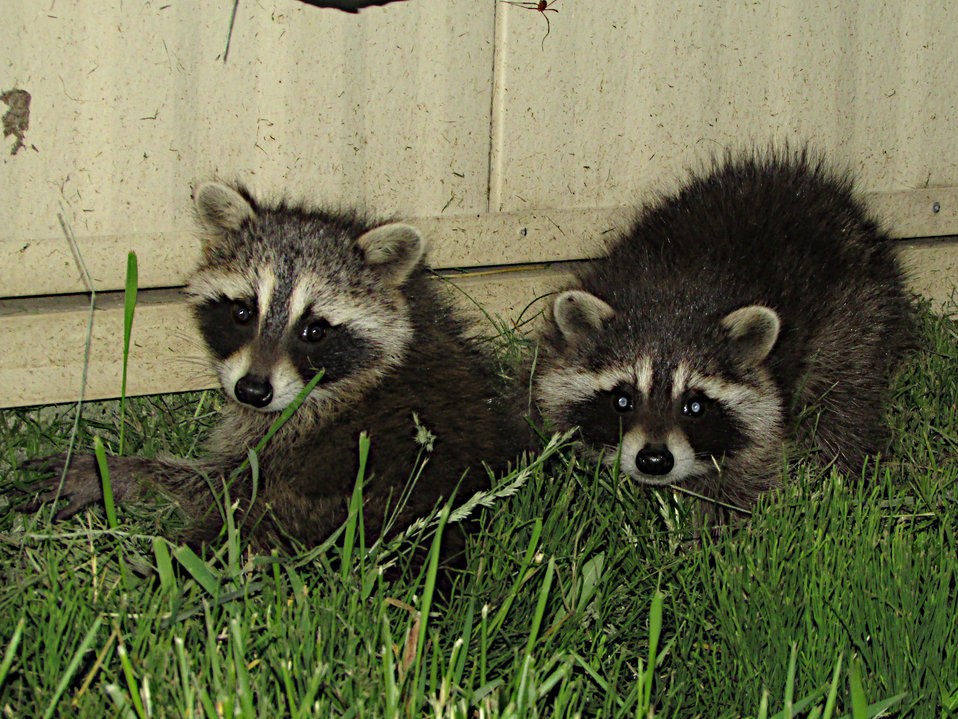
Brothers

Here is a pair of young raccoon hiding out next to our sturgeon building. Sometimes it feels like there is more of these guys than fish...